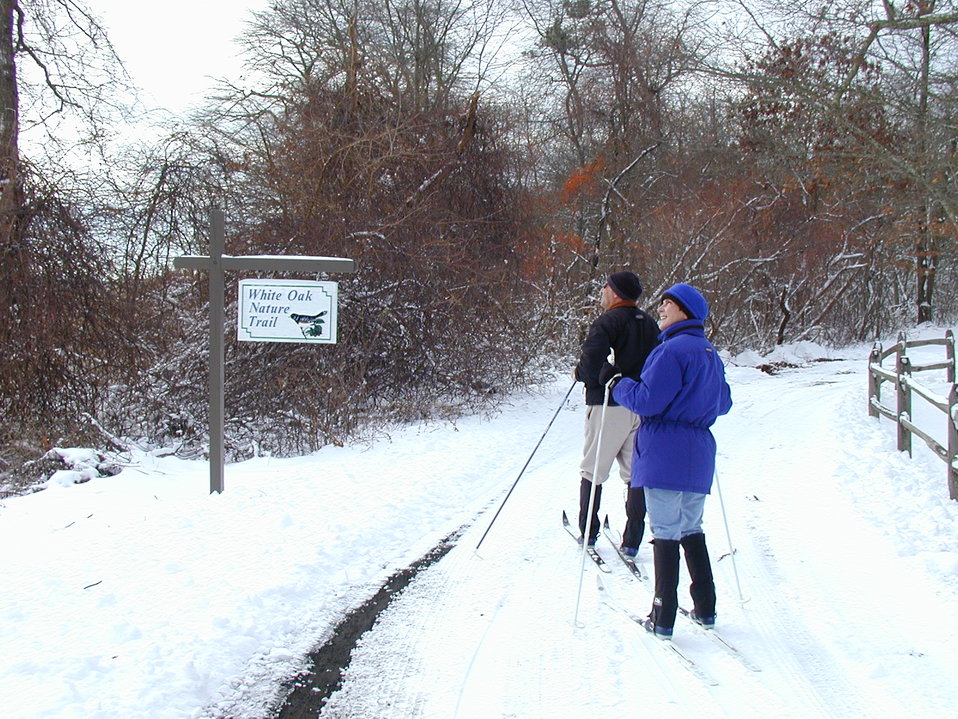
Skiers at Wertheim

Werthem National Wildlife Refuge, NY